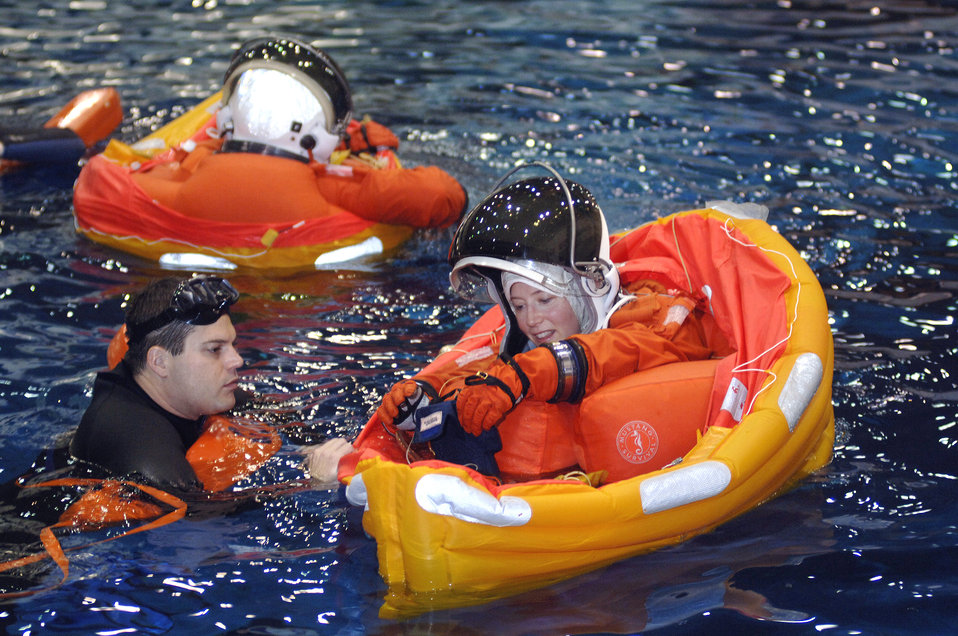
Air Force astronaut reflects on 23 years of service

Col. Pamela Melroy practices evacuation procedures on her last day of active duty during training inside the Neutral Buoyancy Lab Jan 31at the Johnson Space Center, Houston. Colonel Melroy will be the shuttle commander on STS-120 scheduled to launch in September 2007. The lab is the world's largest indoor pool containing 6.2 million gallons of water, which is refiltered every 18 hours.